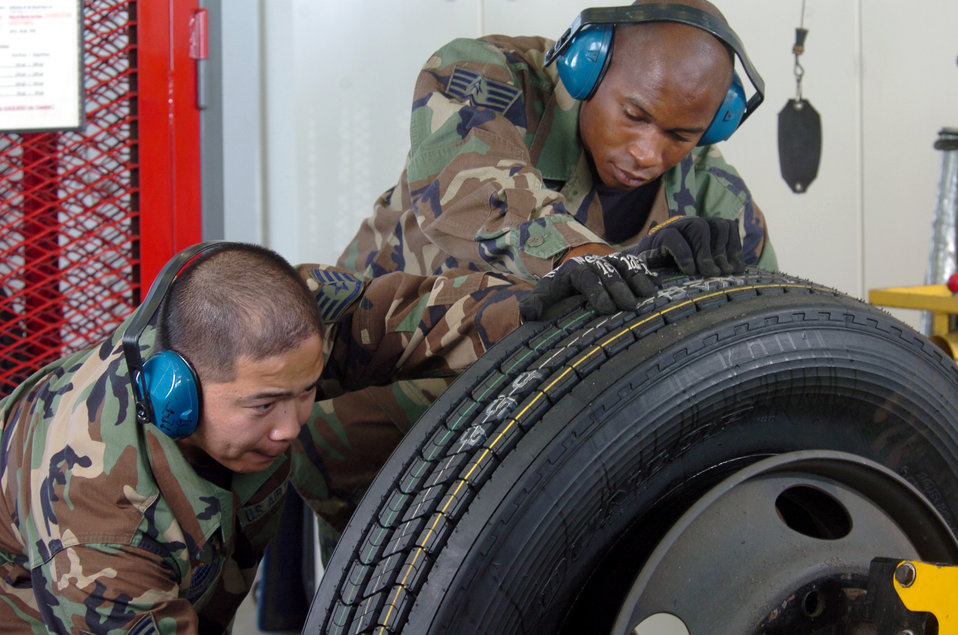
Wheelin’ and dealin’

YOKOTA AIR BASE, Japan (AFPN) -- Staff Sgts. Mike Aquino (left) and Tygi Jones mount a tire onto a wheel. Both Airmen are mechanics with the 374th Logistics Readiness Squadron's vehicle maintenance element here. The element replaces and rebuilds parts and components for more than 1,100 vehicles here. Some of these parts include vehicle engines, transmissions, suspensions and steering and brake systems.